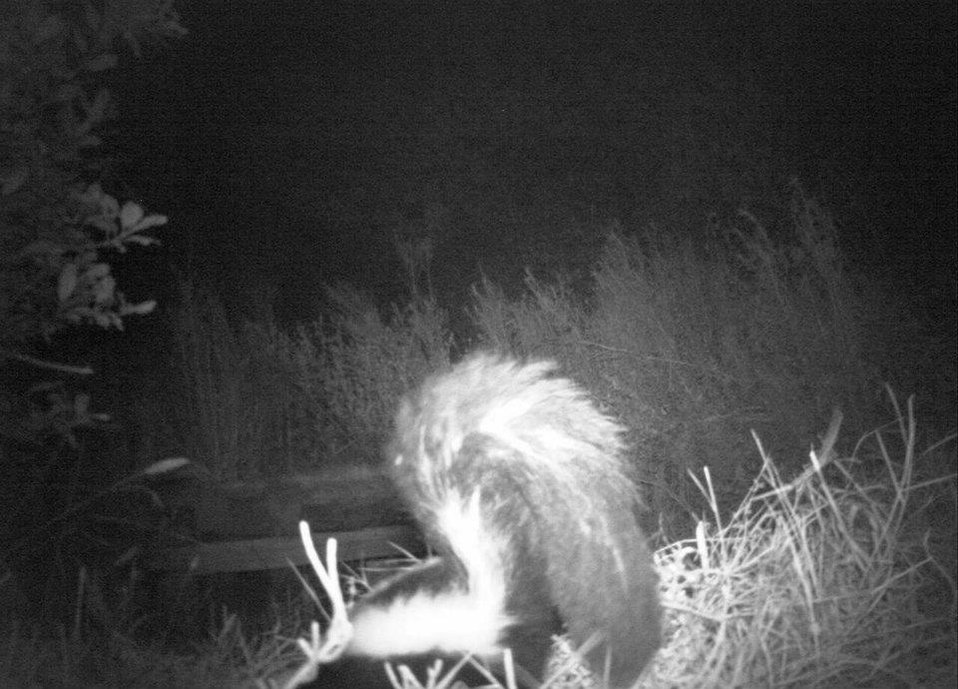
skunk

Don Edwards San Francisco Bay National Wildlife Refuge, CA
Camera trap photo: Bryan White, USFWS